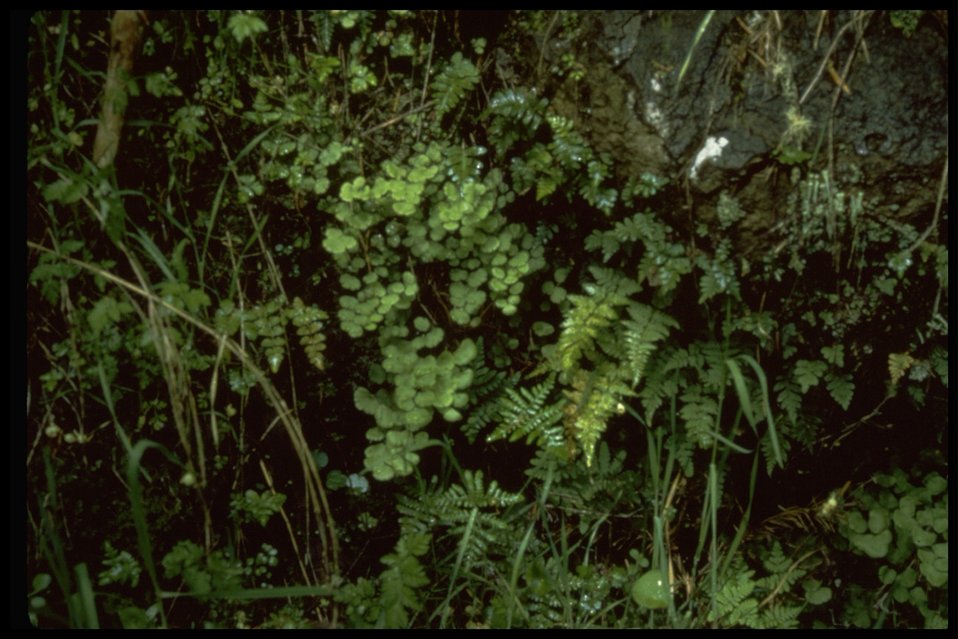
Farshot of California maidenhair fern (Adiantum jordanii).